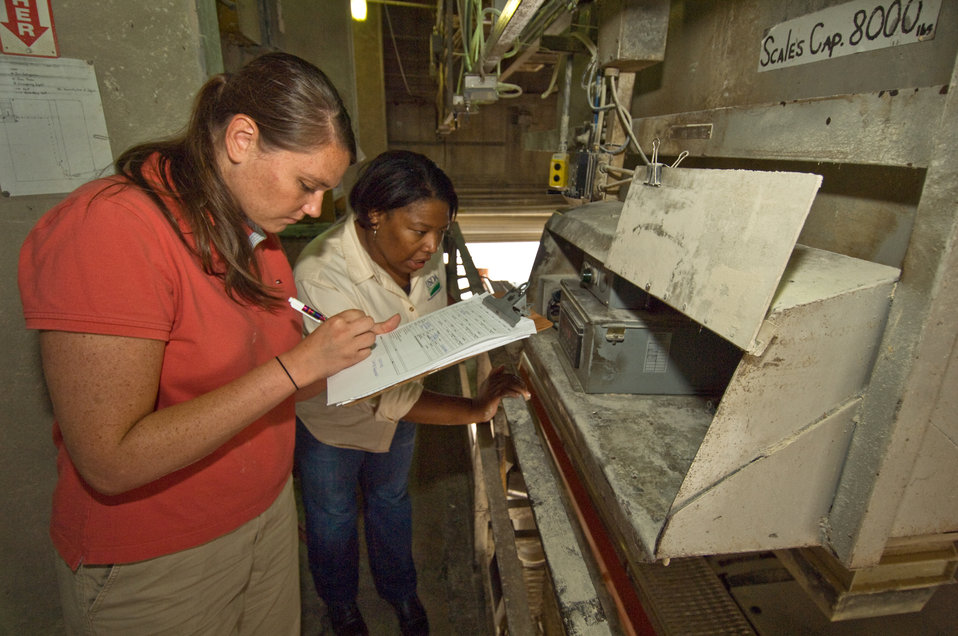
U.S. Department of Agriculture (USDA) Grain Inspection, Packers, and Stockyards Administration (GIPSA) resident agents, Jaime Ziem (left) and Melba Twitty (right) obtain weights during a check weigh of poultry feed on a hopper scale at a feed mill in Paradise, Pennsylvania on July 22, 2008. GIPSA is a USDA agency that facilitates the marketing of livestock, poultry, meat, cereals, oilseeds, and related agricultural products, and promotes fair and competitive trading practices for the overall benefit of consumers and American agriculture.